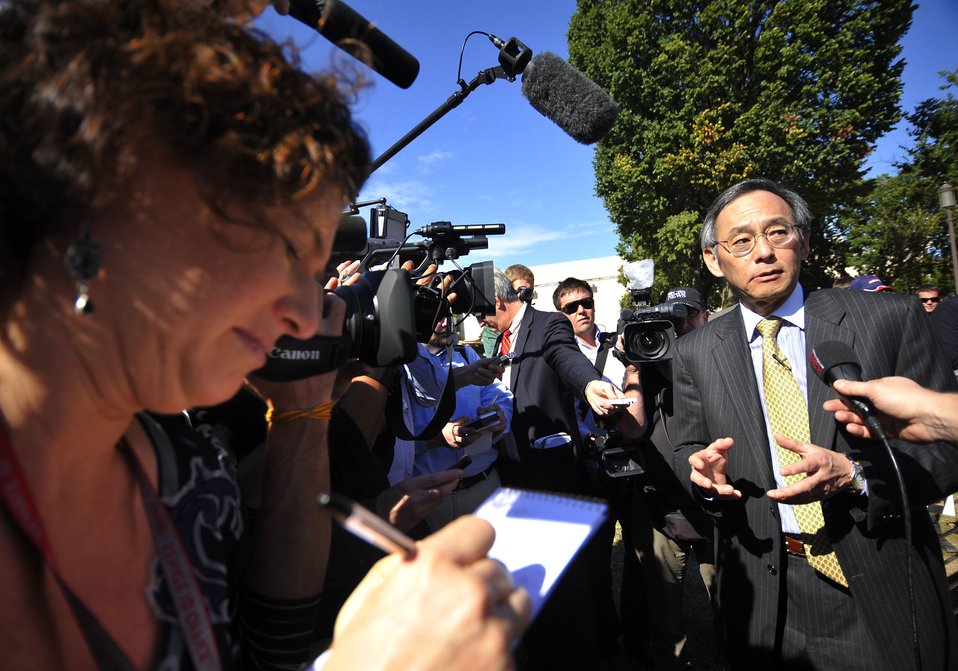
Solar Decathlon 2009 on the National Mall, with Sec. Chu

Solar Decathlon 09